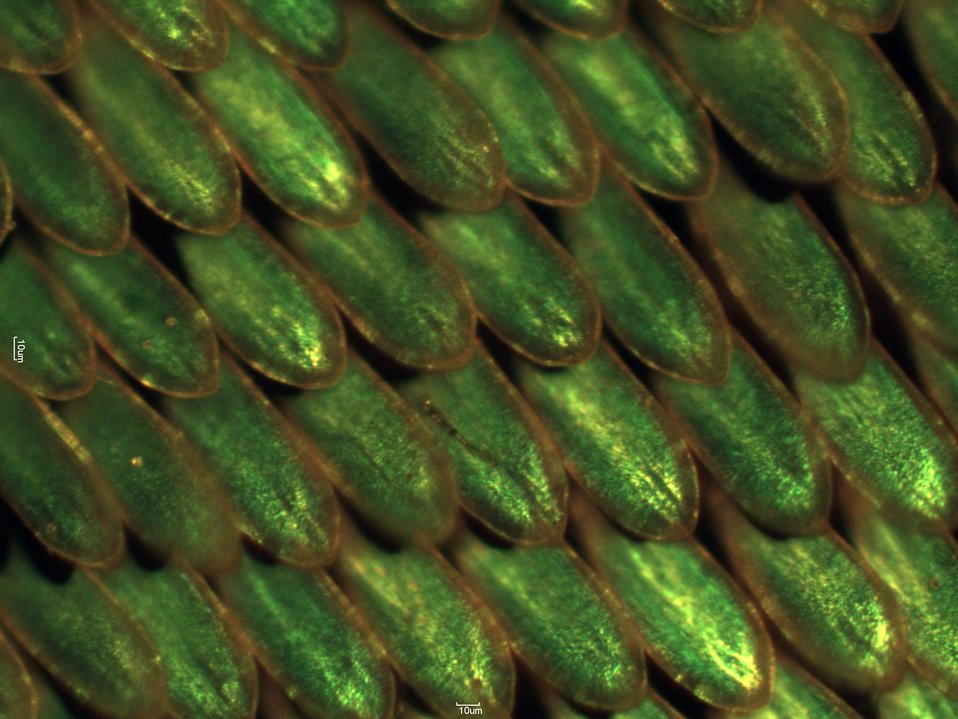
October 26, 2012: Butterflies, Crystal Nanostructures and Solar Cell Research

What do butterflies and solar cell research have in common? Both have been developing tiny crystals that selectively reflect colors. Over millions of years of evolution, butterfly wings have developed the tiny crystal nanostructures that give butterflies their vivid colors. At Argonne National Laboratory, scientists are working to manufacture these crystals, which could one day be used to create 'greener' and more efficient paints, fiber optics and solar cells. In this photo, the iridescent scales of an emerald-patched Cattleheart butterfly are magnified 20 times to highlight the crystals that selectively reflect green colors.